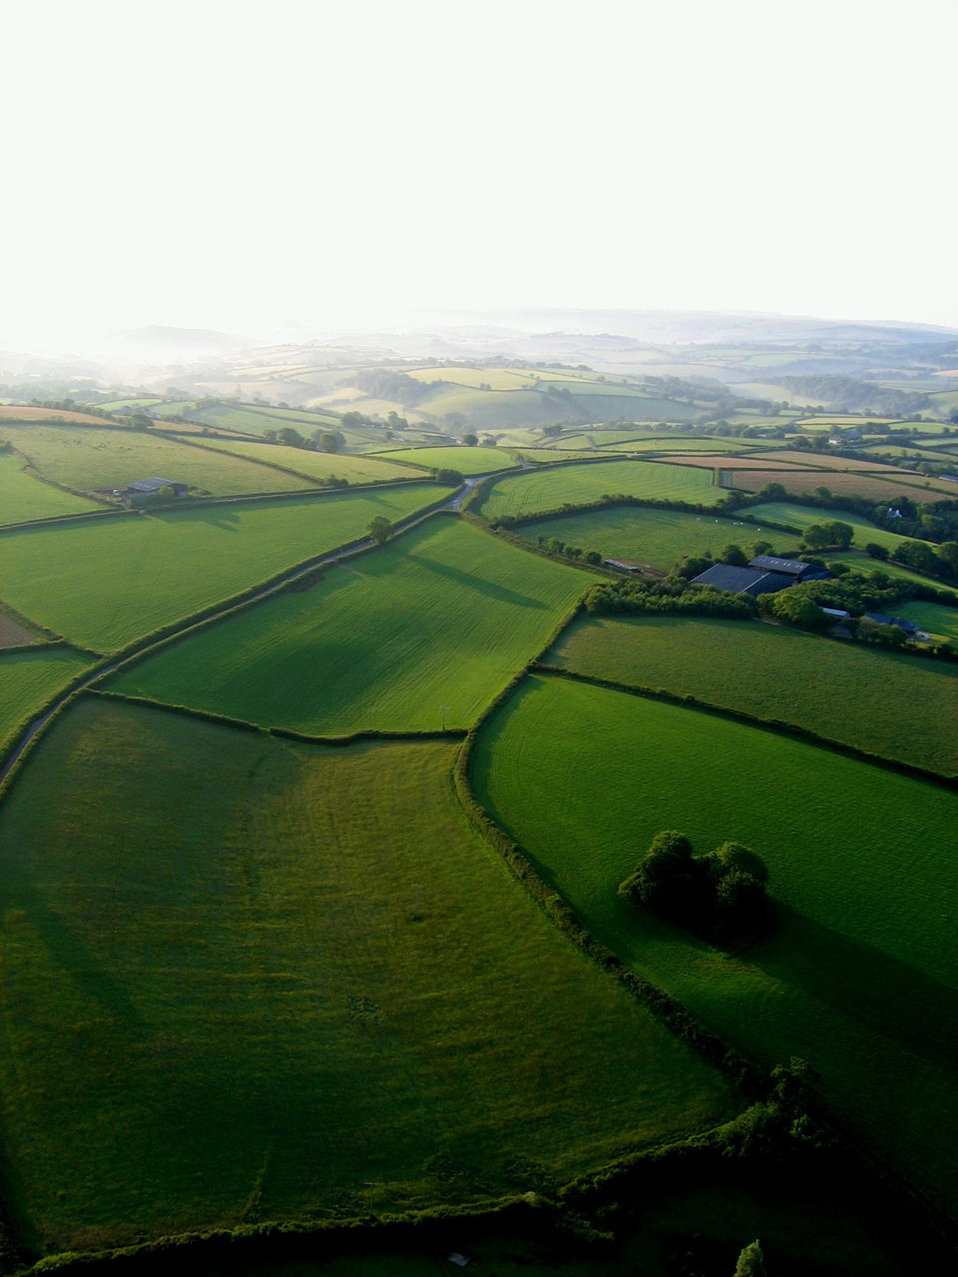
Countryside devon.